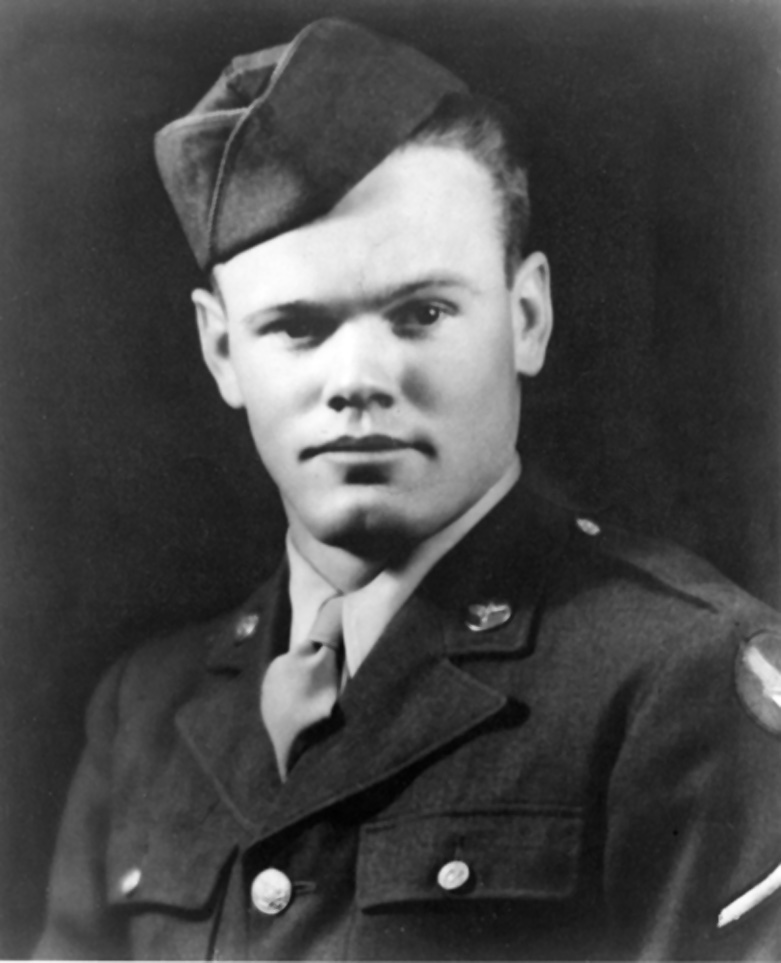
Master Sgt. Henry